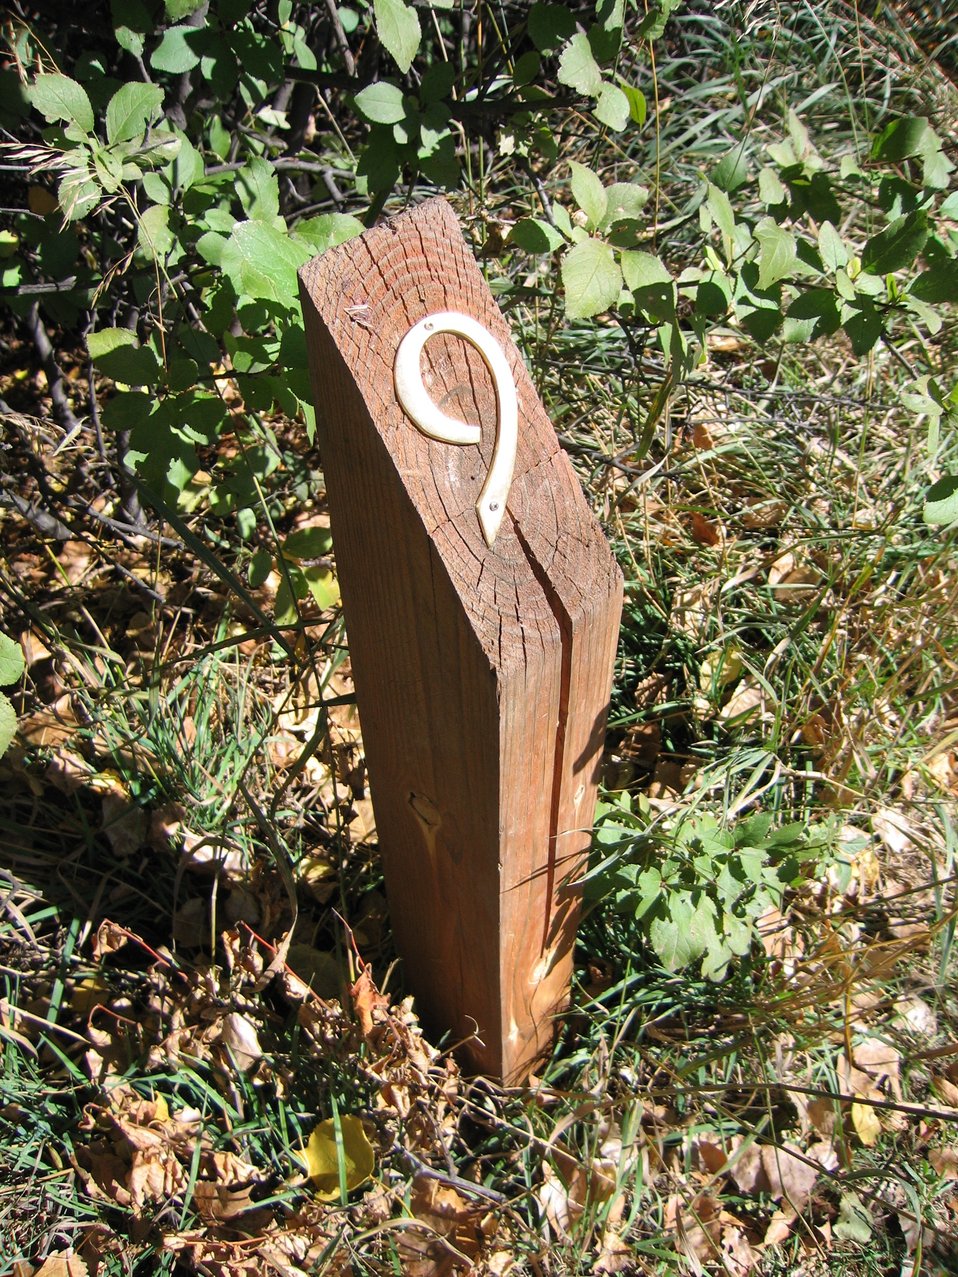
Trail Marker